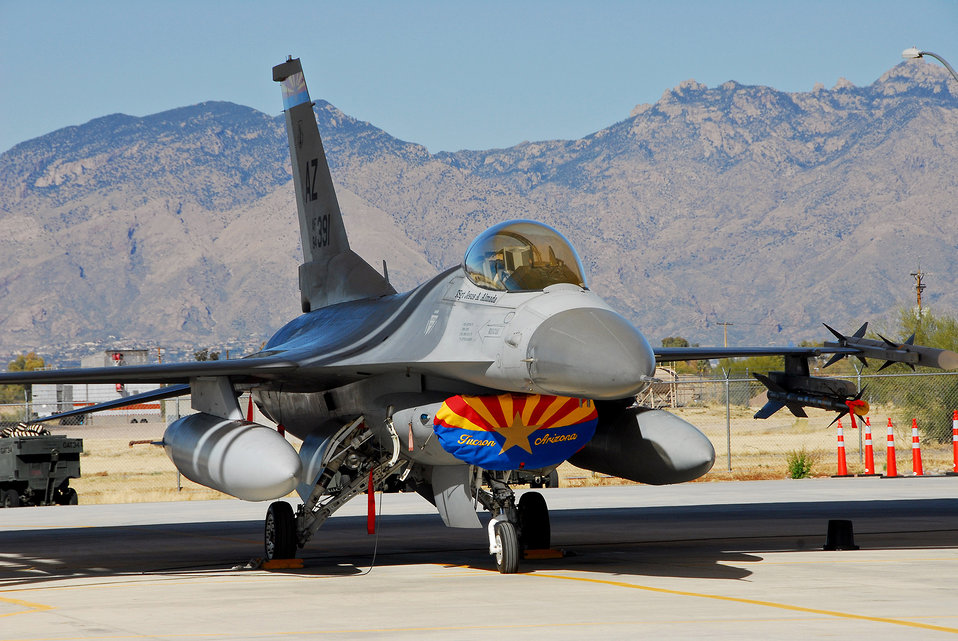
Exercise Amalgam Virgo

F-16 Fighting Falcons, like the one shown here, sit ready to deploy at a moment's notice to respond to possible or real air threats over the United States. Continental U.S. North American Aerospace Defense Command Region officials will be conducting Exercise Amalgam Virgo 10-Miami on Jan. 28, 2010, to test command and control and execution procedures for air defense for Super Bowl XLIV.